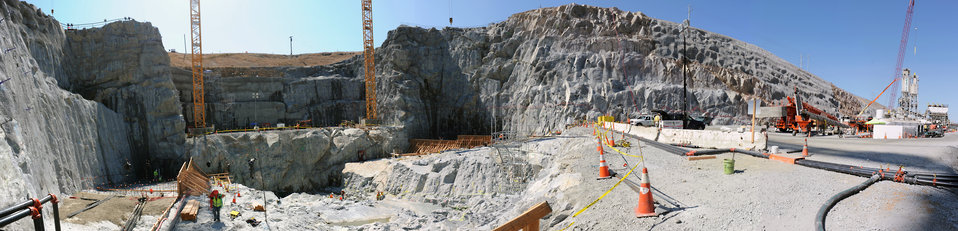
Panoramic view of auxiliary spillway construction at Folsom Dam site

Using digital imaging technology that “stitches” multiple images together to create a panoramic image, geologists for the U. S. Army Corps of Engineers Sacramento District provided this glimpse into the past of the Folsom Dam Joint Federal Project auxiliary spillway construction. The images used in the panoramic were taken May 23, 2012 at the Folsom Dam in Folsom, Calif. The Sacramento District is building the spillway in cooperation with the U.S. Bureau of Reclamation, the Central Valley Flood Protection Board, and the Sacramento Area Flood Control Agency to improve the safety of the existing dam and reduce flood risk for the greater Sacramento area. (U.S. Army photo illustration by Coralie Wilhite/Released)